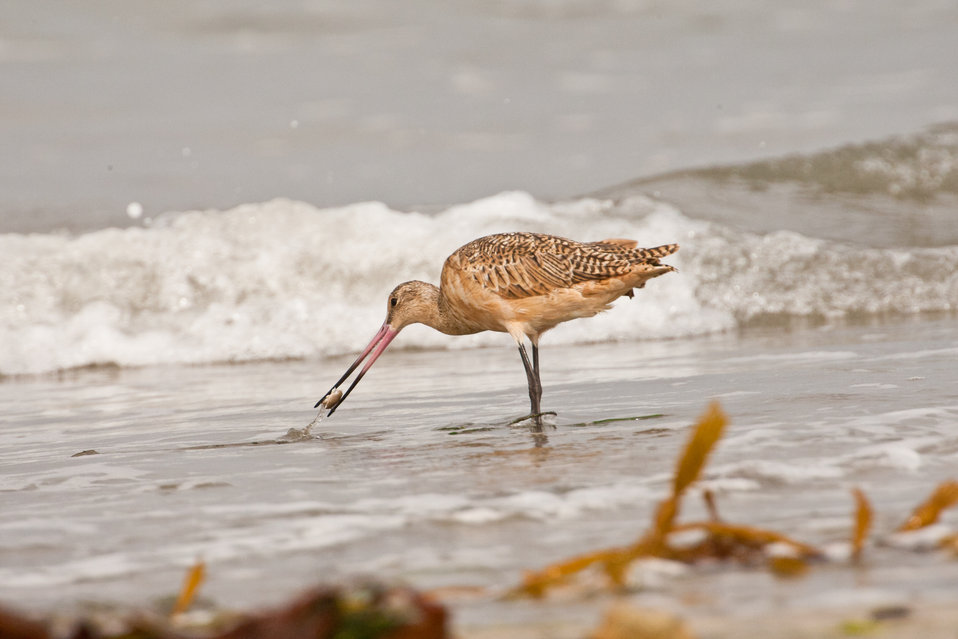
Marbled godwit (adult) catching a crab